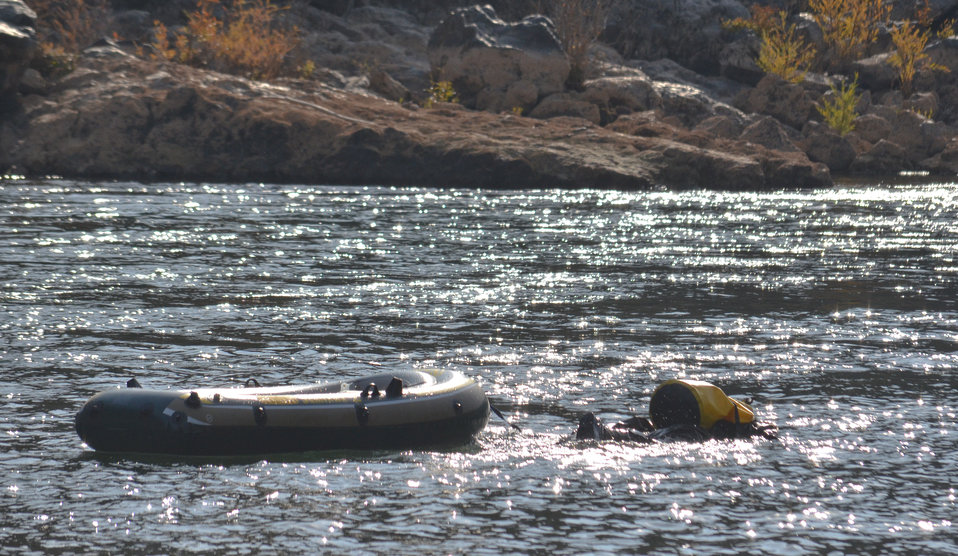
Tracking salmon spawning below Englebright Dam

Pacific States Marine Fisheries Commission biologist Casey Campos looks for evidence of salmon spawning in the Yuba River below Englebright Dam near Smartsville, Calif., Dec. 12, 2011. Under the direction of the National Marine Fisheries Service, the U.S. Army Corps of Engineers Sacramento District, which owns and manages the dam, has placed more than 5,000 tons of gravel in the river to improve spawning habitat for the threatened Chinook salmon and steelhead trout species. The PSMFC is charged with tracking spawning activity related to the new gravel.